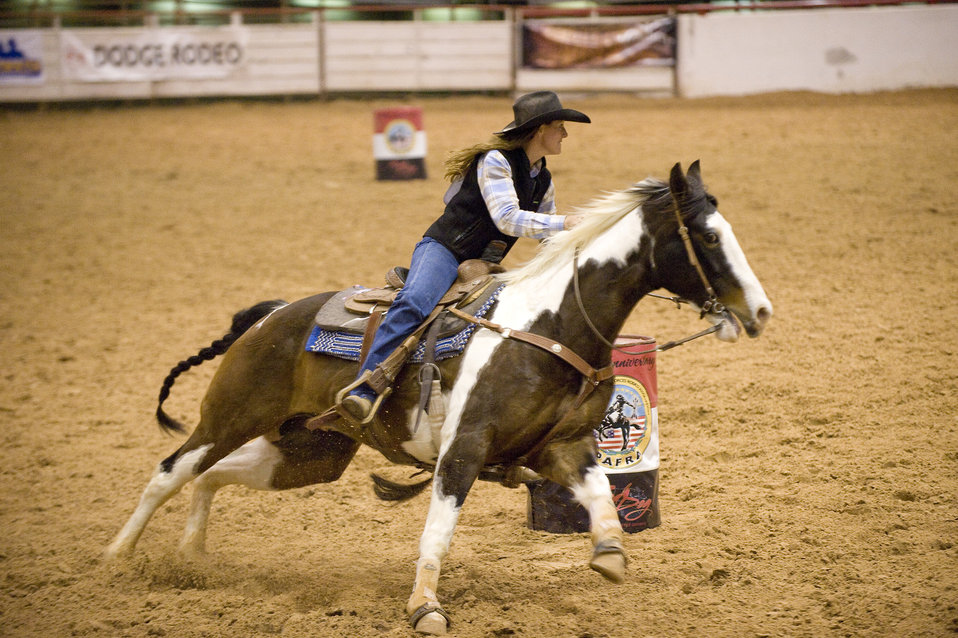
Airmen rope competition at rodeo world finals

Lt. Col. Val Baker rounds the second barrel during the timed barrel racing competition at the Professional Armed Forces Rodeo Associations World Finals Nov. 20, 2010, in Glen Rose, Texas. Colonel Baker is stationed at Fort Huachuca, Ariz., and earned first place in the Woman's All-Around winning top honors in the rodeo while competing in five events.